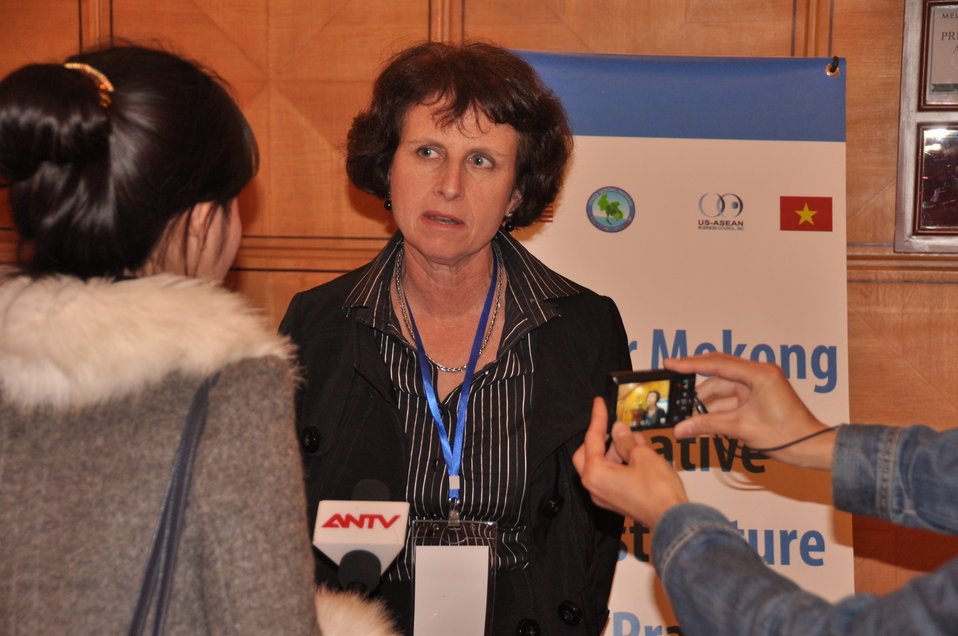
Ms. Lorraine Hariton, Special Representative for Commercial and Business Affairs, U.S. Department of State, answers media questions at the LMI Infrastructure Best Practices Exchange in Hanoi

January 14, 2013